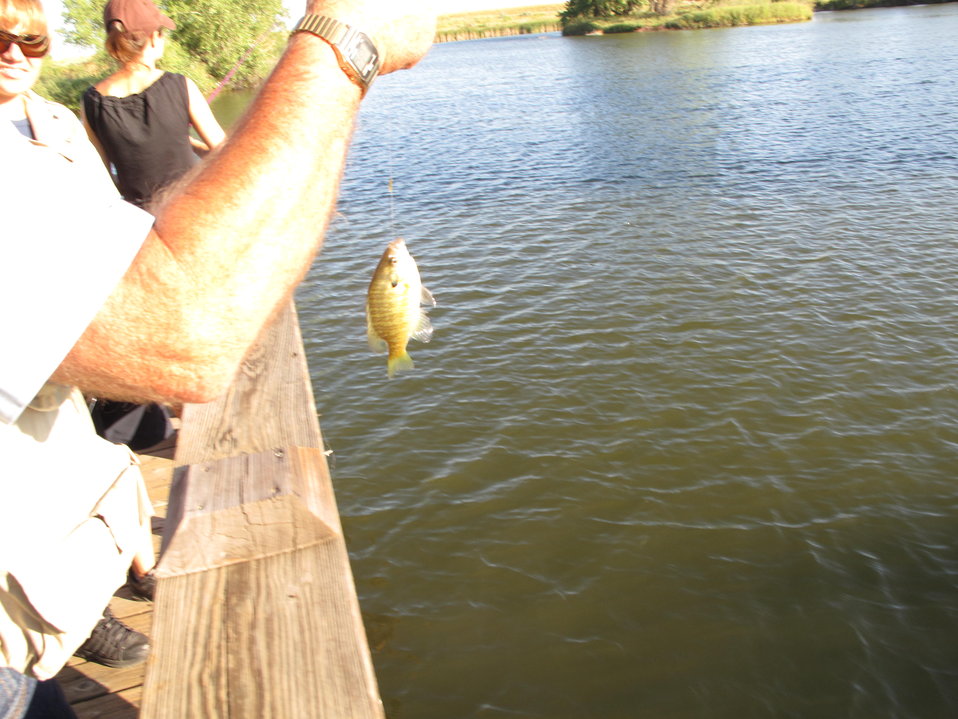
Caught a Fish